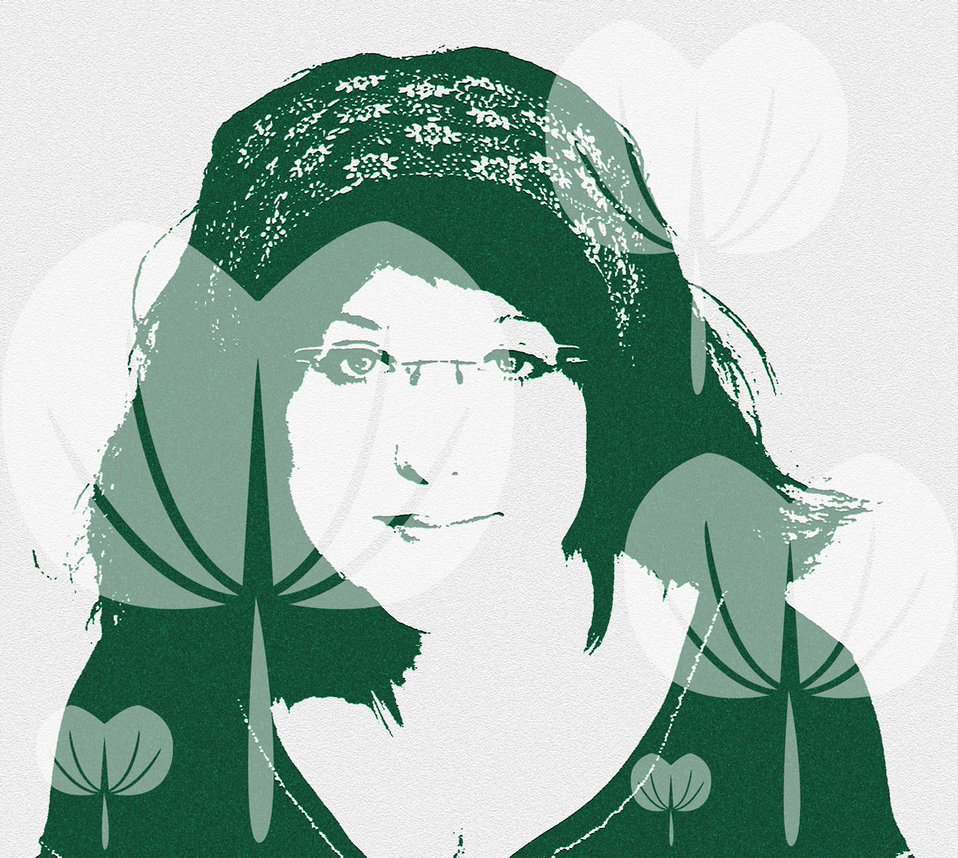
Girl in a floral headband

Note paper style portrait of a girl in a floral headband.